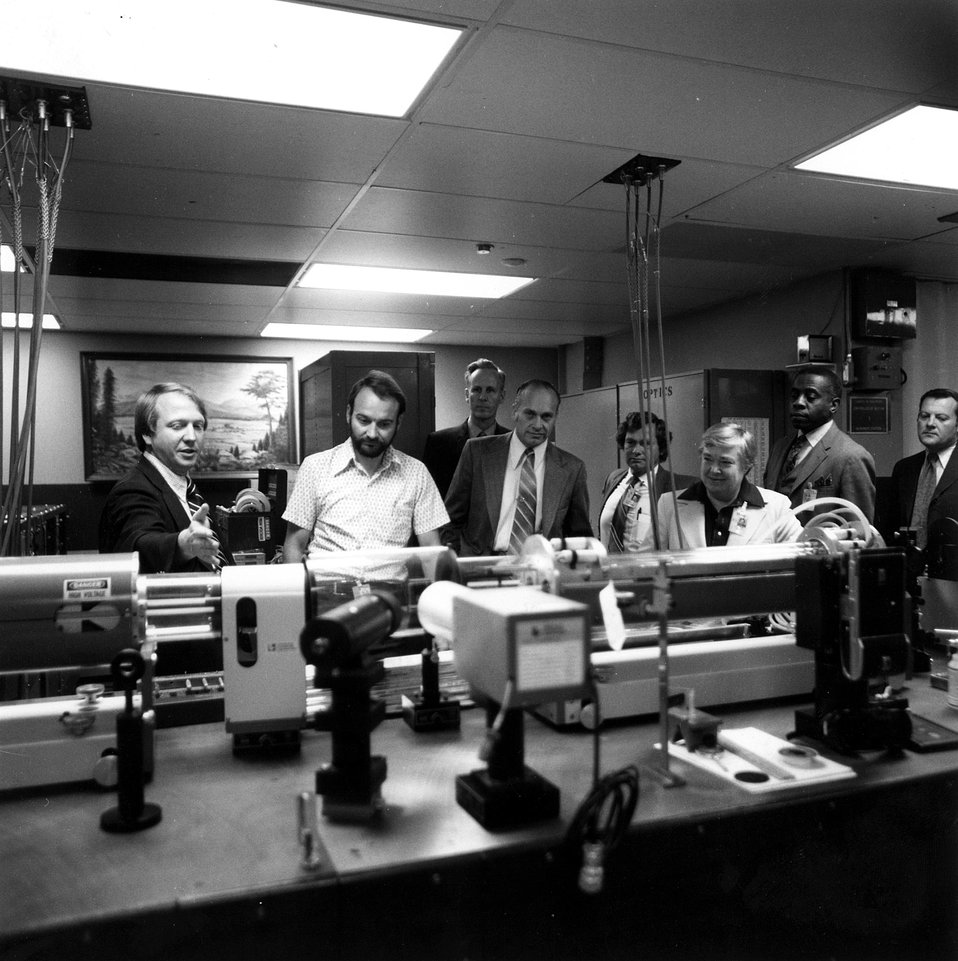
AEC Chairman Ray reviewed the laser fusion program in late 1973. Laser chain is in the foreground. c. 1973.